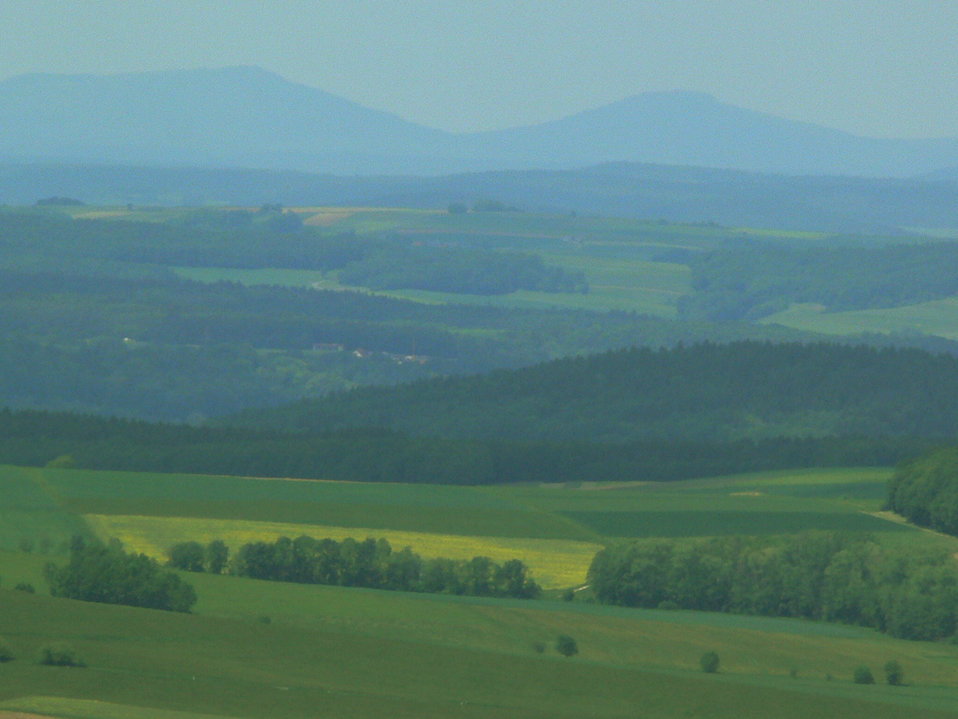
053 Gleichberge, Thüringen